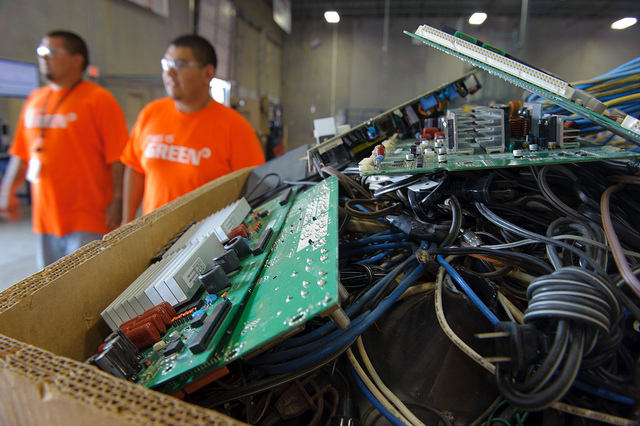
EM Wins Awards for Taking Big Steps to Reduce DOE’s Electronics Footprint

EM sites won the majority of awards given to DOE for their outstanding performance in the 2012 Federal Electronics Challenge (FEC). This Environmental Protection Agency initiative encourages federal facilities to buy greener electronics, lessen their impact during use and discard outdated equipment in an environmentally safe way.

If EM were a freestanding agency, it would rank second in total number of FEC awards received within the entire federal government.